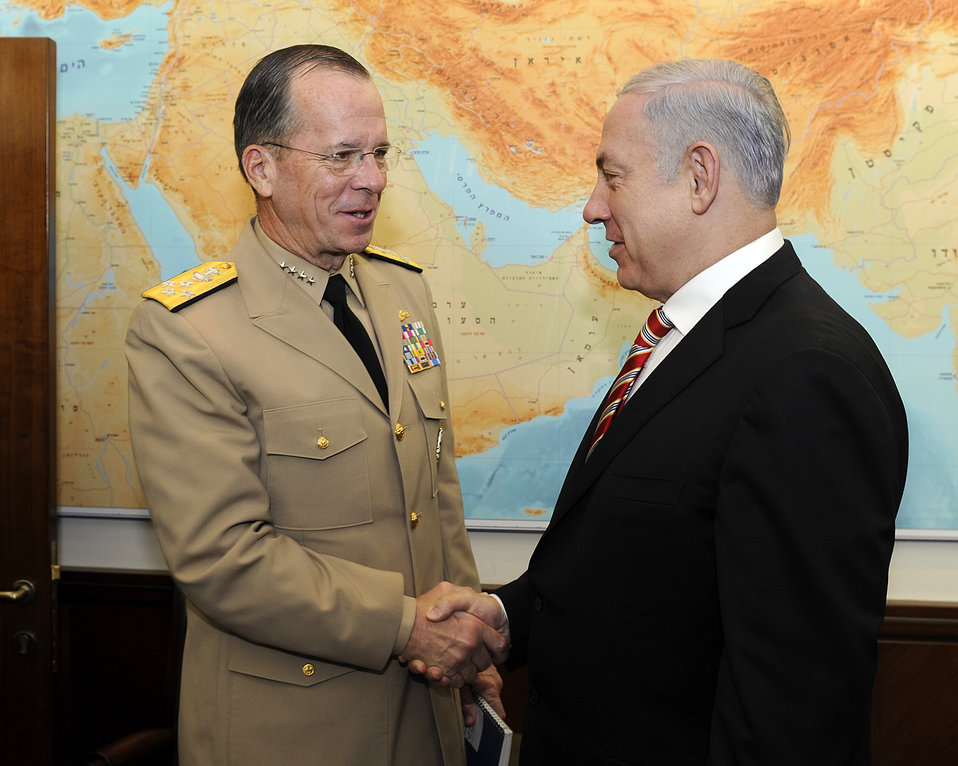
Admiral Mullen Shakes Hands With Israeli Prime Minister Netanyahu

Admiral Michael Mullen, Chairman of the Joint Chiefs of Staff of the U.S. Military, shakes hands with Israeli Prime Minister Benjamin Netanyahu in Jerusalem on July 19.